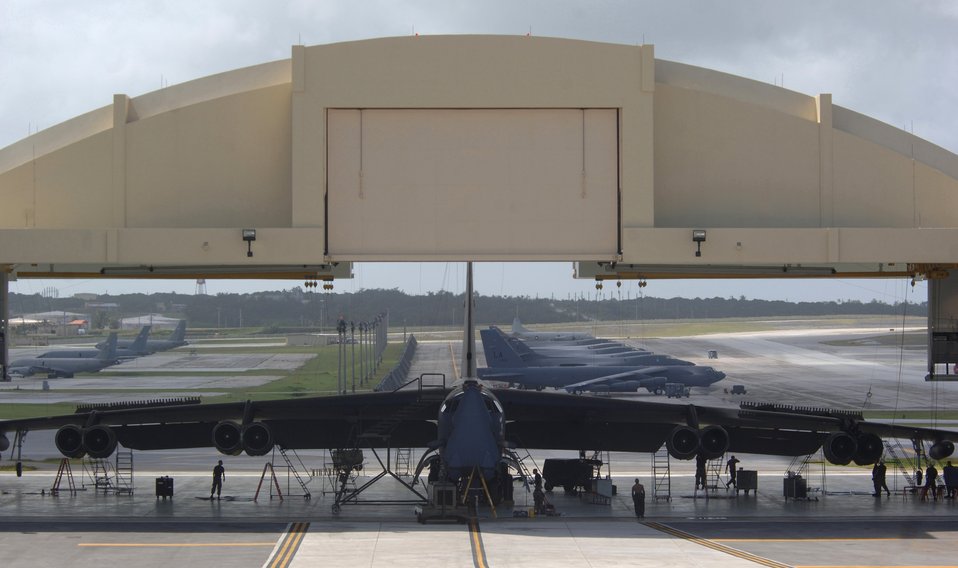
Maintaining the fortress

ANDERSEN AIR FORCE BASE, Guam (AFPN) -- B-52 Stratofortress mechanics inspect their aircraft during phase maintenance at Hangar 1 here. The Airmen are members of the 2nd Maintenance Squadron based at Barksdale Air Force Base, La. The B-52s come here from a forward-deployed location and go into phase maintenance after 300 flying hours. The $34-million hangar is the newest in the Air Force and can house any type of Air Force aircraft.